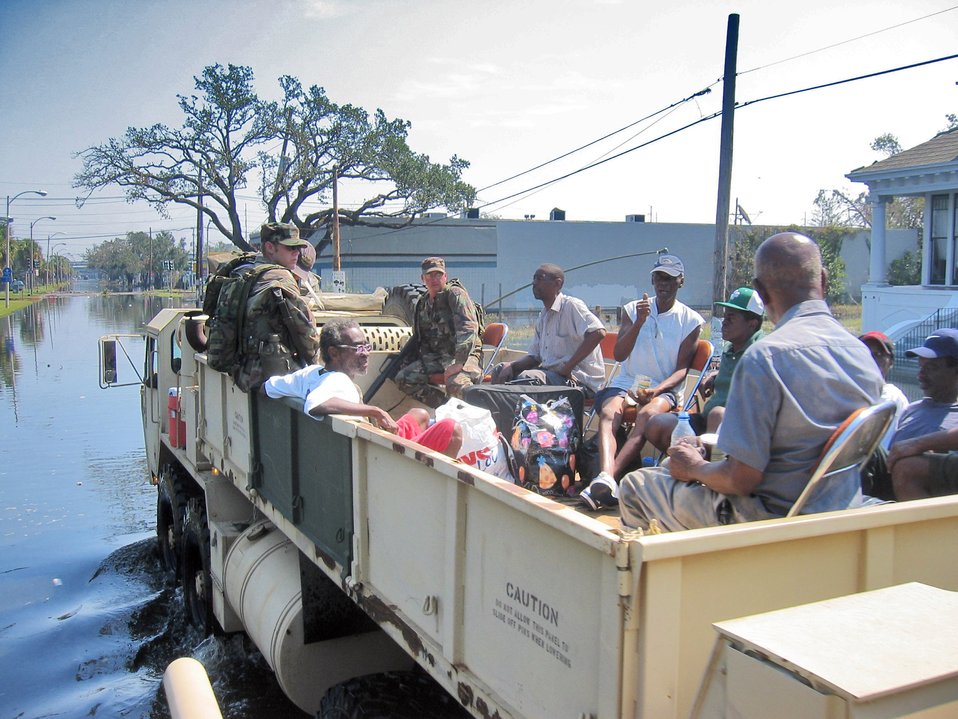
Through the flood

NEW ORLEANS -- A man rescued by Counterdrug National Guardsmen using a Light Armored Vehicle gives a thumb's up after being evacuated from his home. More than 150 victims from the hurricane have been rescued using the LAVs.